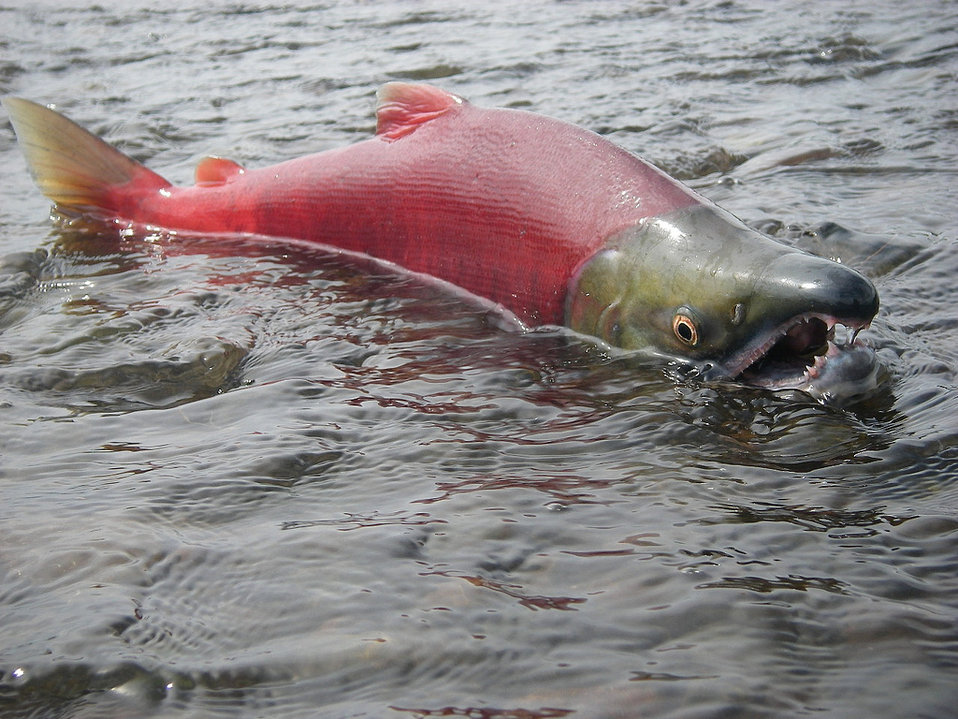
July 2010, Spawning male sockeye

Sockeye salmon get their famously bright red color and hooked nose after they return to freshwater to spawn.
Bristol Bay is home to the largest run of wild sockeye salmon in the world - with an average annual run of over 30 million fish.

This photo was taken on the Wood River, which flows into the Nushagak River just north of Dillingham, Alaska.
Photo courtesy of Thomas Quinn, University of Washington

Visit www.epa.gov/bristolbay to learn more about EPA's Bristol Bay Watershed Assessment.